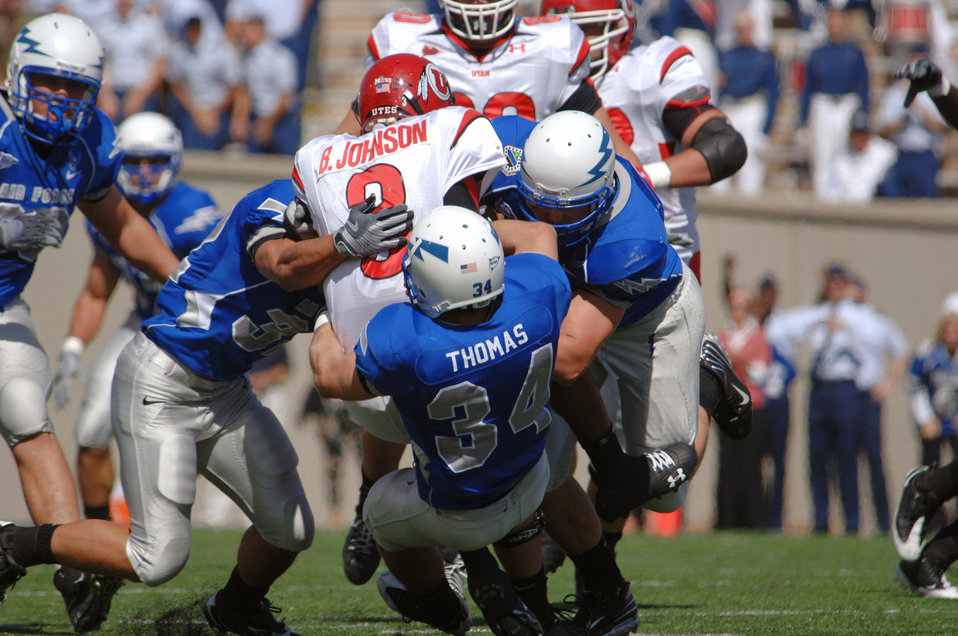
Football: Utah downs Air Force 30-23

Utah quarterback Brian Johnson gets mobbed for a loss by U.S. Air Force Academy linebacker Hunter Altman, safety Chris Thomas and defensive end Ryan Kemp Sept. 20 at the Academy in Colorado.